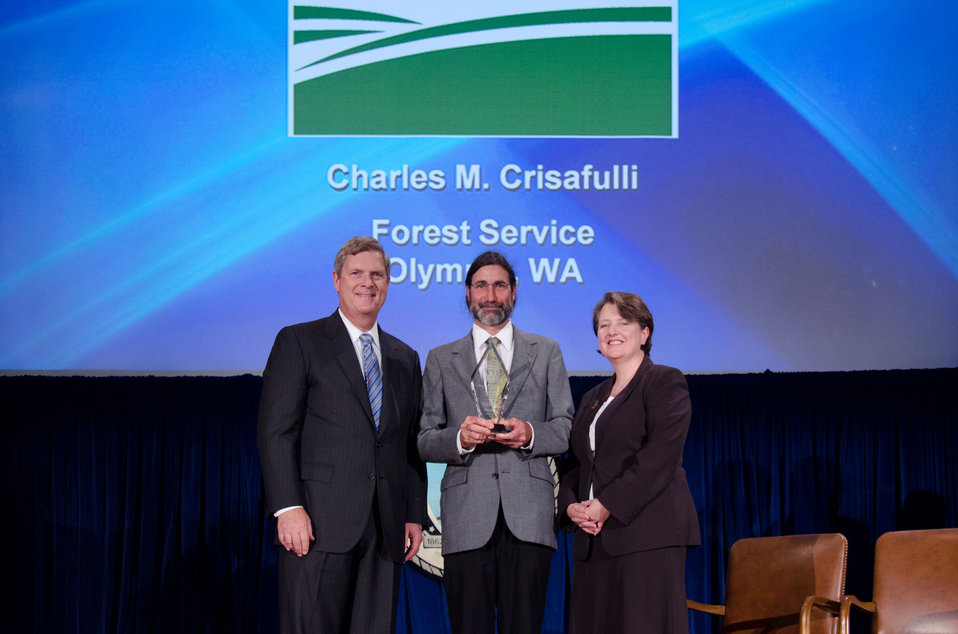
Agriculture Secretary Tom Vilsack (l) and Deputy Secretary Kathleen Merrigan (r), presents the Award for Personal and Professional Excellence to Charles M. Crisafulli, Forest Service, Olympia, WA. For your leadership and your effort to communicate the significance of long-term scientific research at the Mount St. Helens National Volcanic Monument to the science community, natural resource policy-makers, and the general public. On Wednesday, September 14, 2011 in the Jefferson Auditorium at the US Department of Agriculture in Washington, DC.